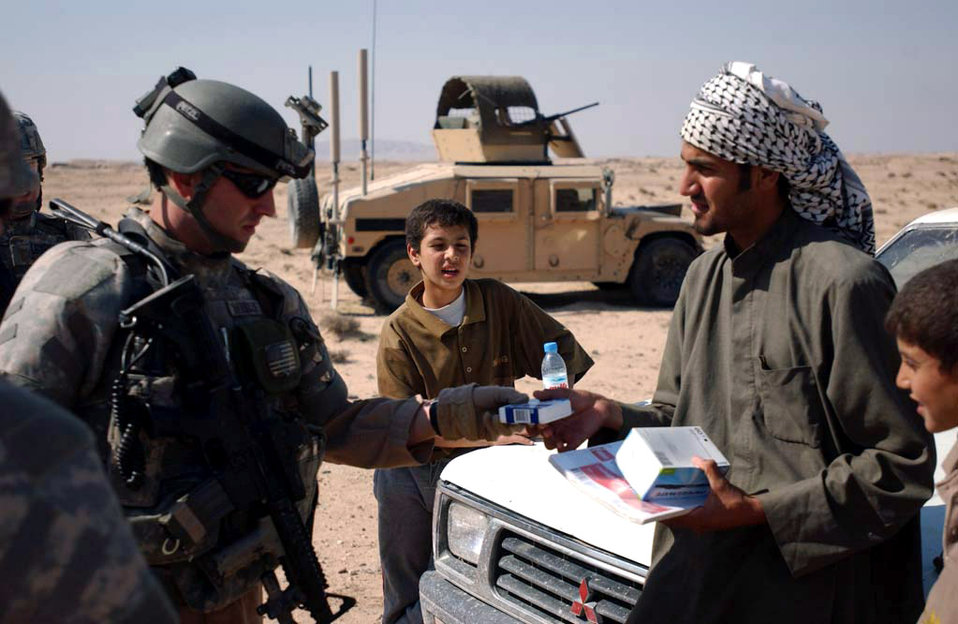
Airmen help shape tomorrow's Iraq

Staff Sgt. Matthew Hamblen distributes schools supplies to an Iraqi man for his younger brothers Feb. 7 near Umm Qasr, Iraq. The donation is part of an area-wide effort around Camp Bucca, Iraq, to aid the surrounding citizens in maintaining their newly returned province. Al-Basra became the ninth province in Iraq to be transitioned to Iraqi provincial control in January. Sergeant Hamblen is deployed from Moody Air Force Base, Ga.